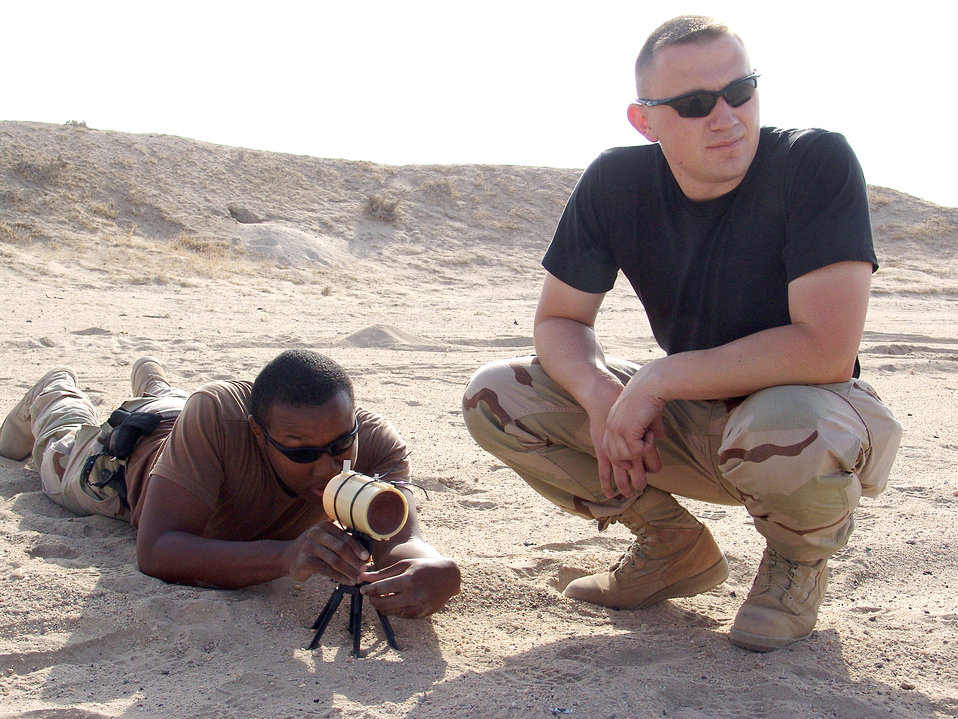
By my mark

SOUTHWEST ASIA -- Staff Sgt. Monty Woolam and Senior Airman Keith Green sight in a mark 24 for disposing of explosives. Sergeant Woolam and Airman Green are assigned to the 386th Expeditionary Civil Engineer Squadron's explosive ordnance disposal unit and are deployed from Elmendorf Air Force Base, Alaska.